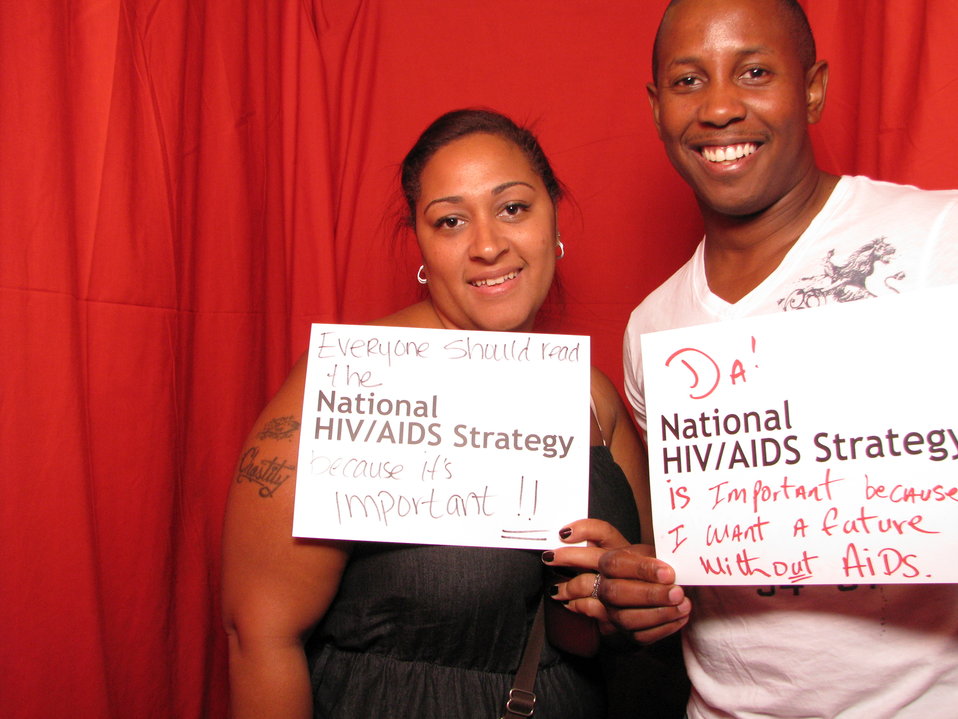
Everyone Should Read the National HIV/AIDS Strategy because it's Important! Da National HIV/AIDS Strategy is Important because I Want a Future Without AIDS.

From the AIDS.gov photo booth at the U.S. Conference on AIDS, September 2010 (Orlando, FL).